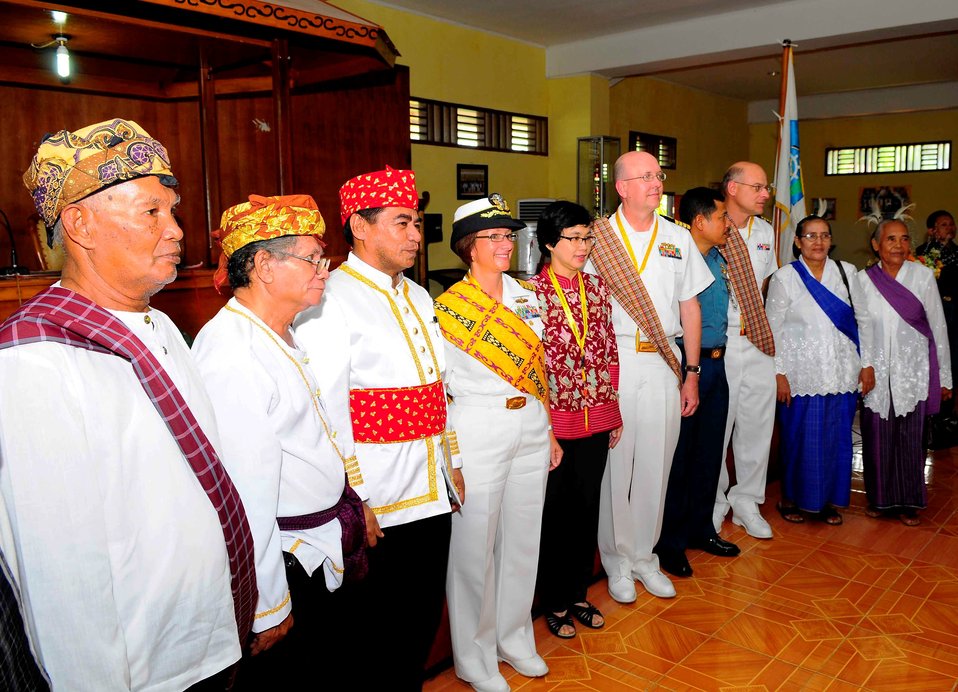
Pacific Partnership 2010 Commander Capt. Lisa M. Franchetti, Capt. Jeffrey Paulson, and Capt. John Parrish pose for a photo with Indonesian medical and government officials at the conclusion of a ceremony marking the beginning of operations by Military Sealift Command hospital ship USNS Mercy (T-AH 19) crewmembers in support of Pacific Partnership 2010 in Tobelo, Indonesia, on July 13, 2010. Pacific Partnership 2010 is the fifth in a series of annual U.S. Pacific Fleet humanitarian and civic assistance endeavors to strengthen regional partnerships.